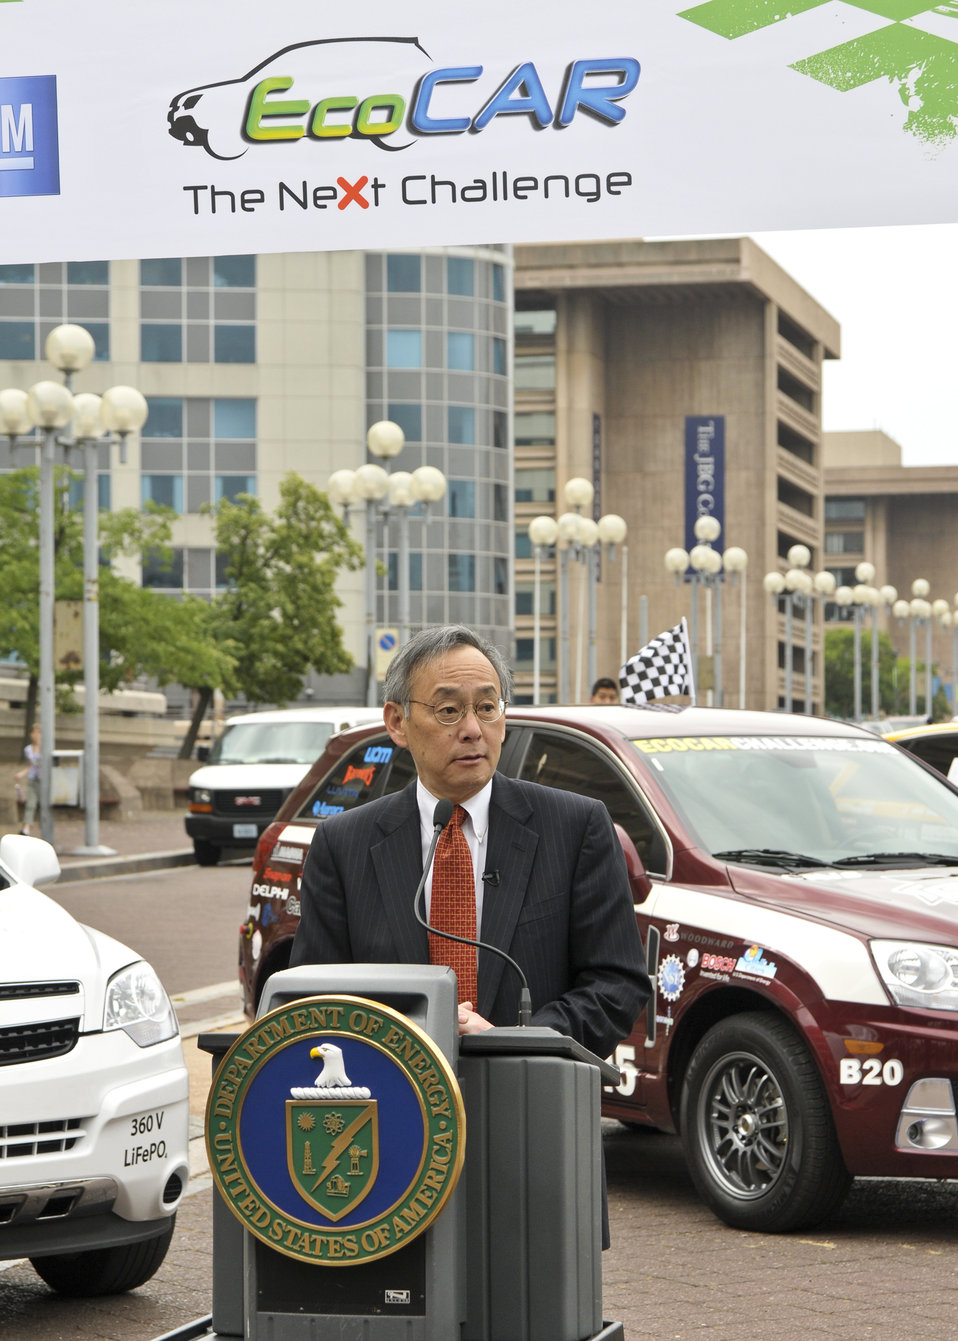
EcoCAR Challenge Finish Line 7 of 8

Secretary Steven Chu addresses the student contestants during the EcoCAR Challenge 'Finish Line' event held at the US Department of Energy headquarters in Washington, DC. | Energy Department Image | Photo by Charles Watkins, Contractor | Public Domain |